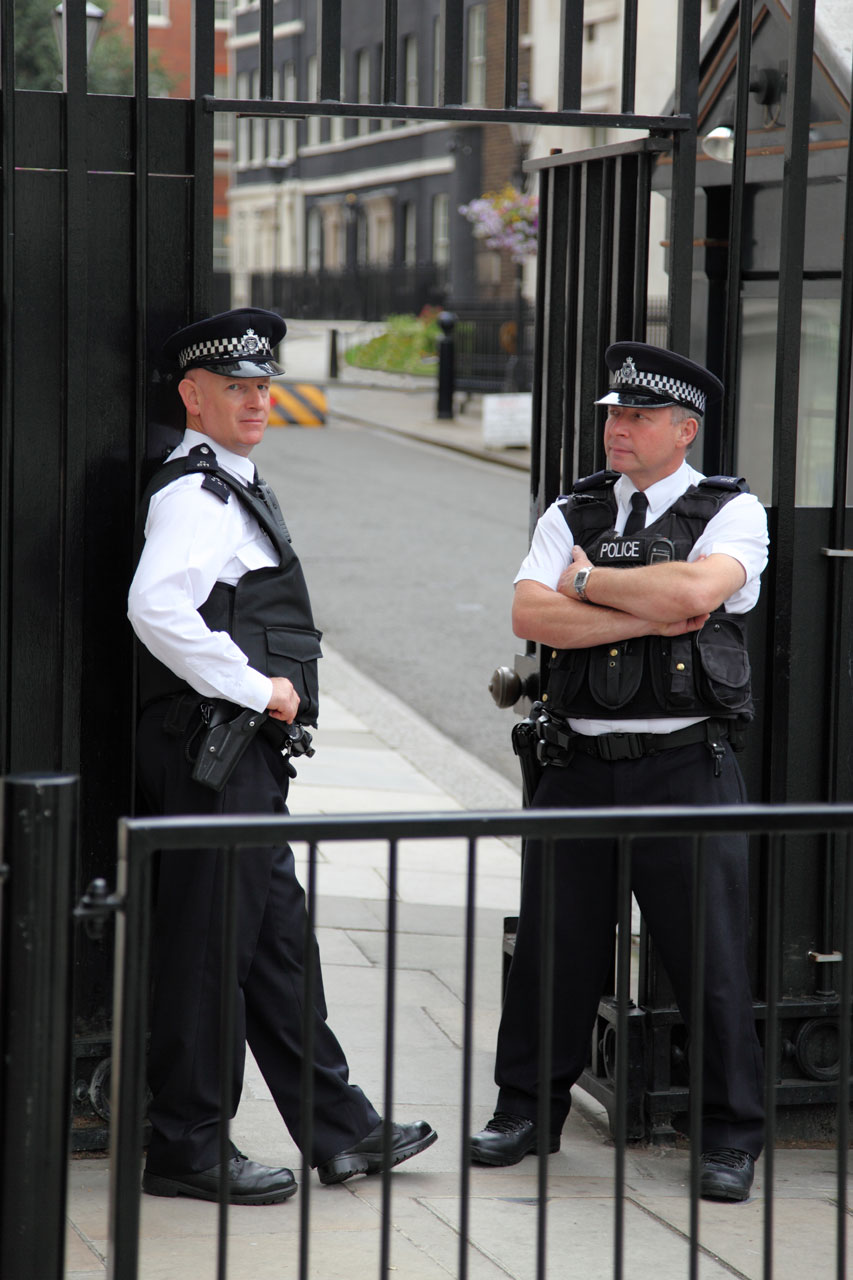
Police officers guarding in london.